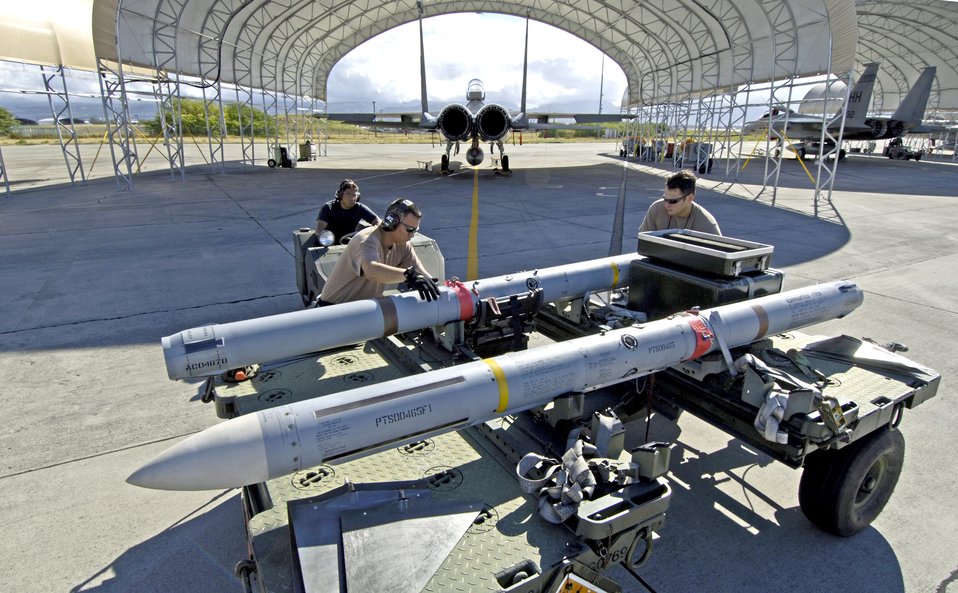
Total force at work in RIMPAC

Weapons loaders prepare to load an AIM-7 Sparrow missile on an F-15 Eagle at Hickam Air Force Base, Hawaii, on July 16 during the Rim of the Pacific Exercise 2006. The Airmen are with the Hawaii Air National Guard's 154th Aircraft Maintenance Squadron.